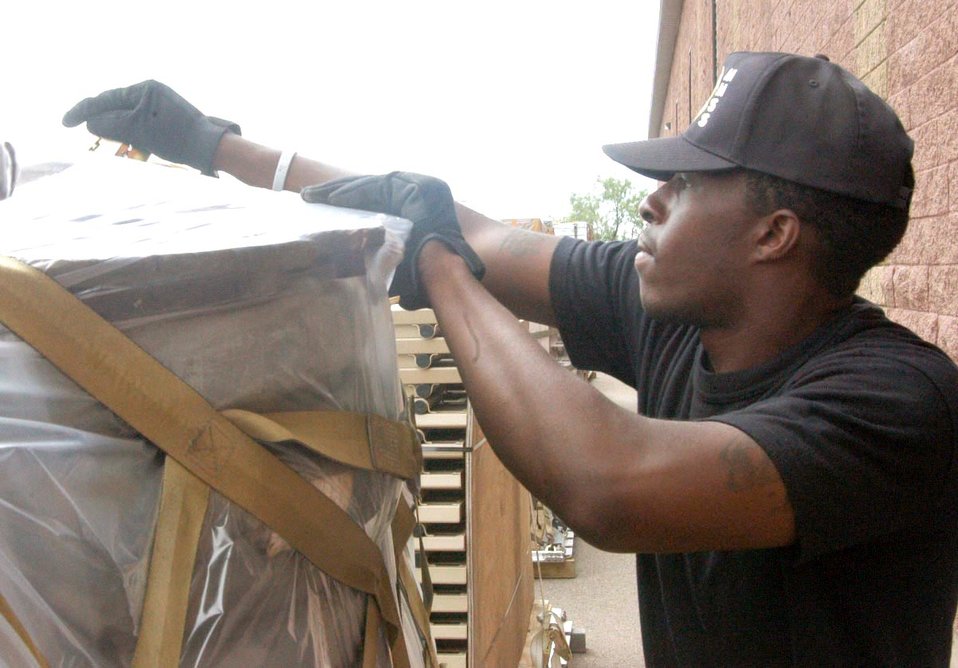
Hurricane relief

HOLLOMAN AIR FORCE BASE, N.M. -- Airman 1st Class Marcus Maze checks the stability of a pallet here before it is loaded on a C-5 Galaxy bound for the Gulf Coast. He is assigned to the 49th Materiel Maintenance Support Squadron.